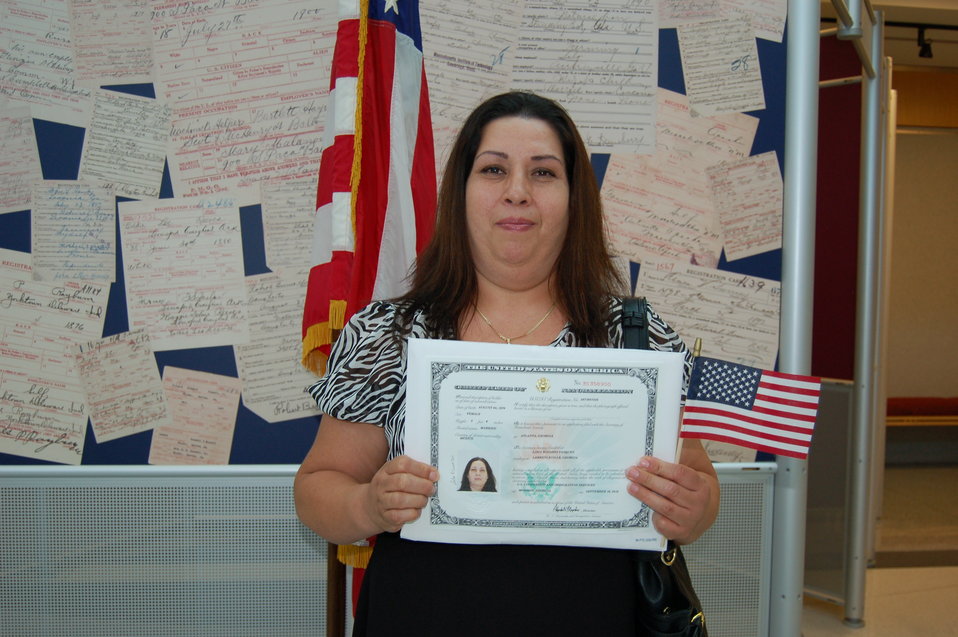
New Citizens